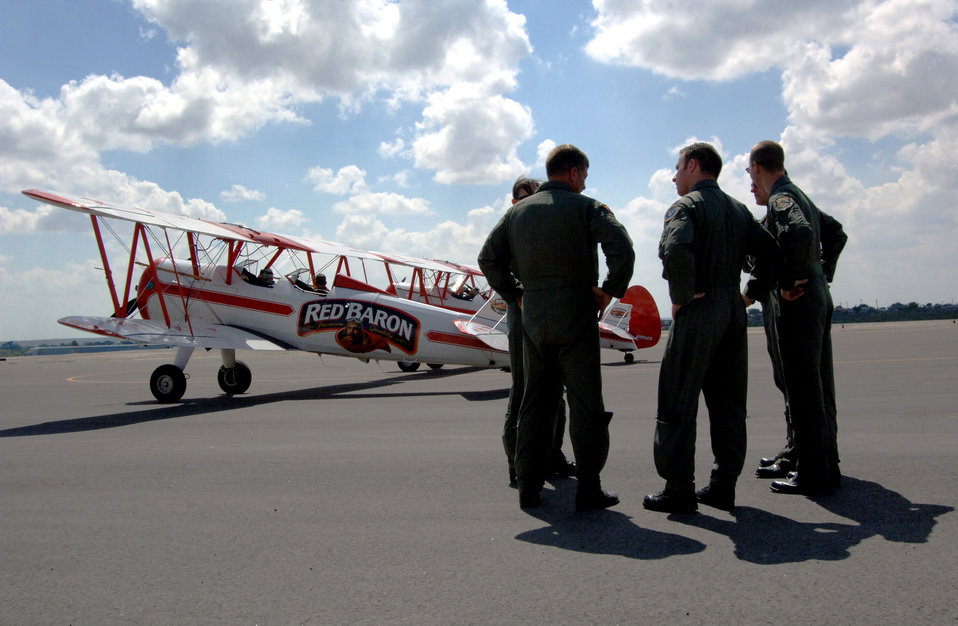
Baron Barnstormers

Airmen from Laughlin Air Force Base wait for their incentive flight from the Red Baron Pizza Squadron at Del Rio, Texas, on Oct. 1. The Red Barons are vintage